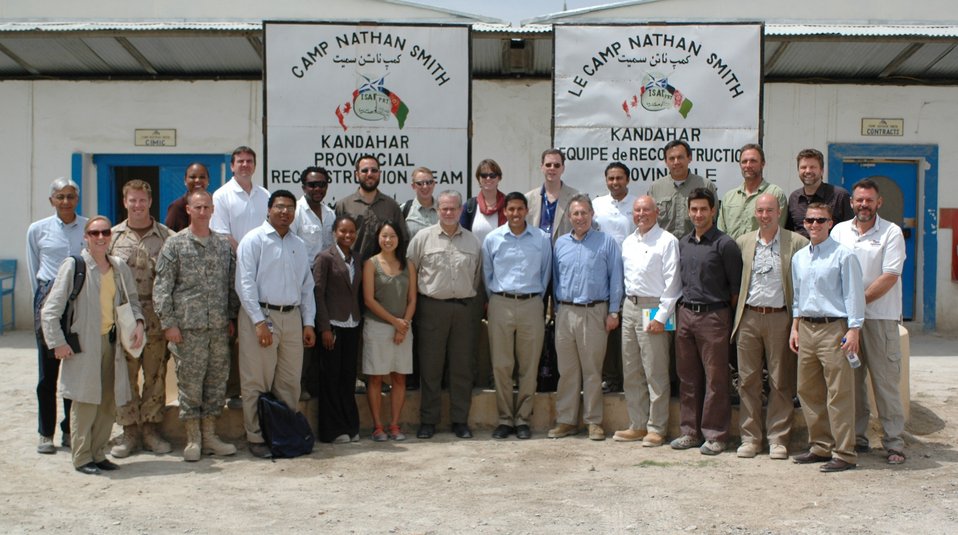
Dr Shah Visits Kandahar April 9, 2010